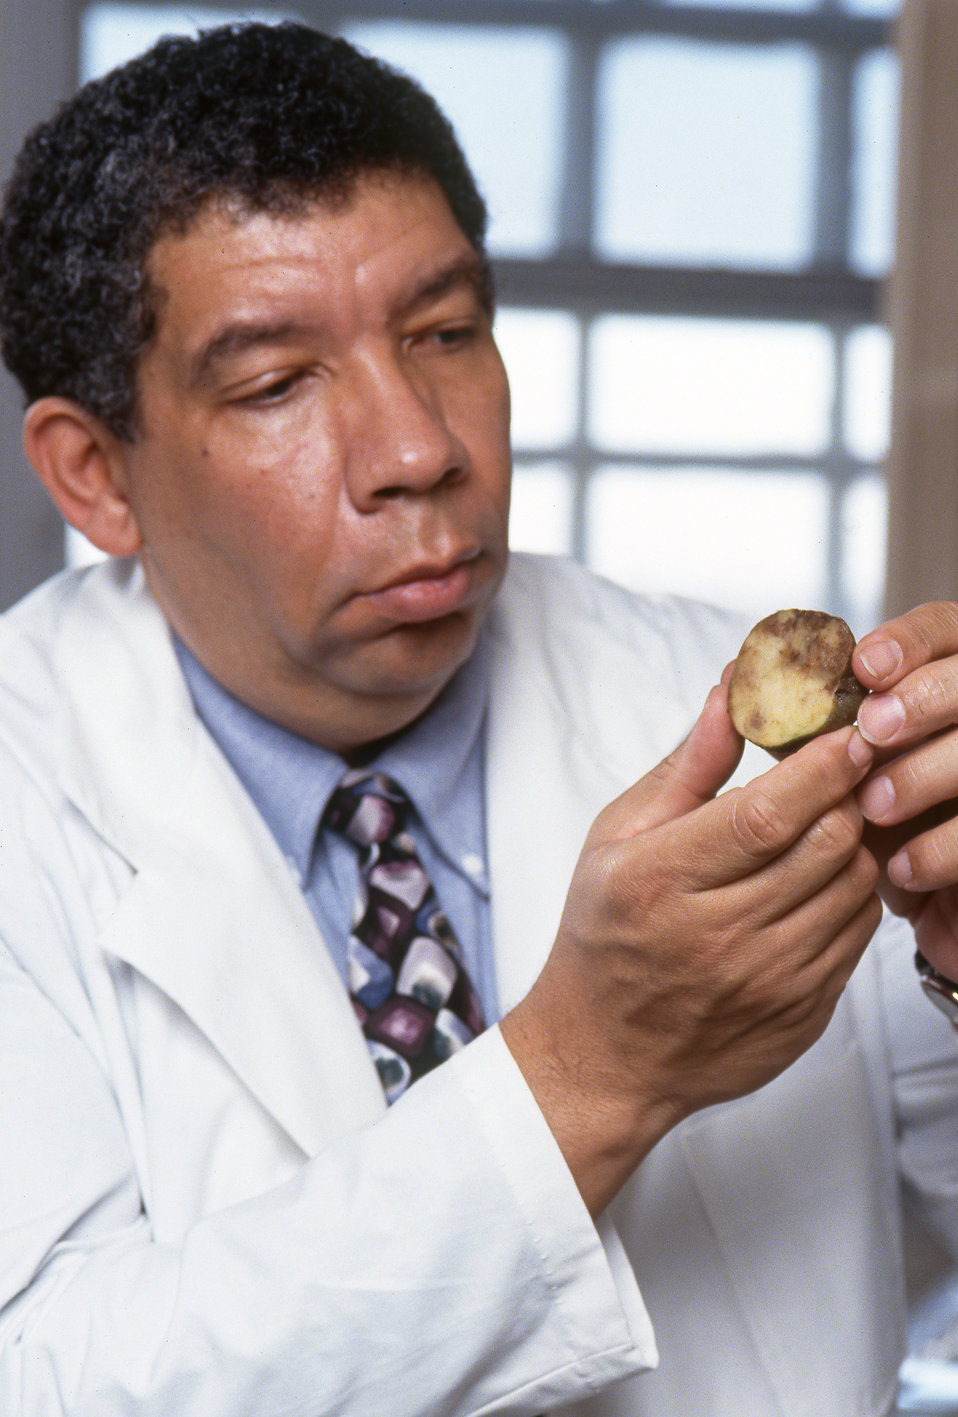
U.S. Department of Agriculture (USDA), Agriculture Research Service (ARS) plant pathologist Ken Deahl examines a potato damaged by late blight fungus.